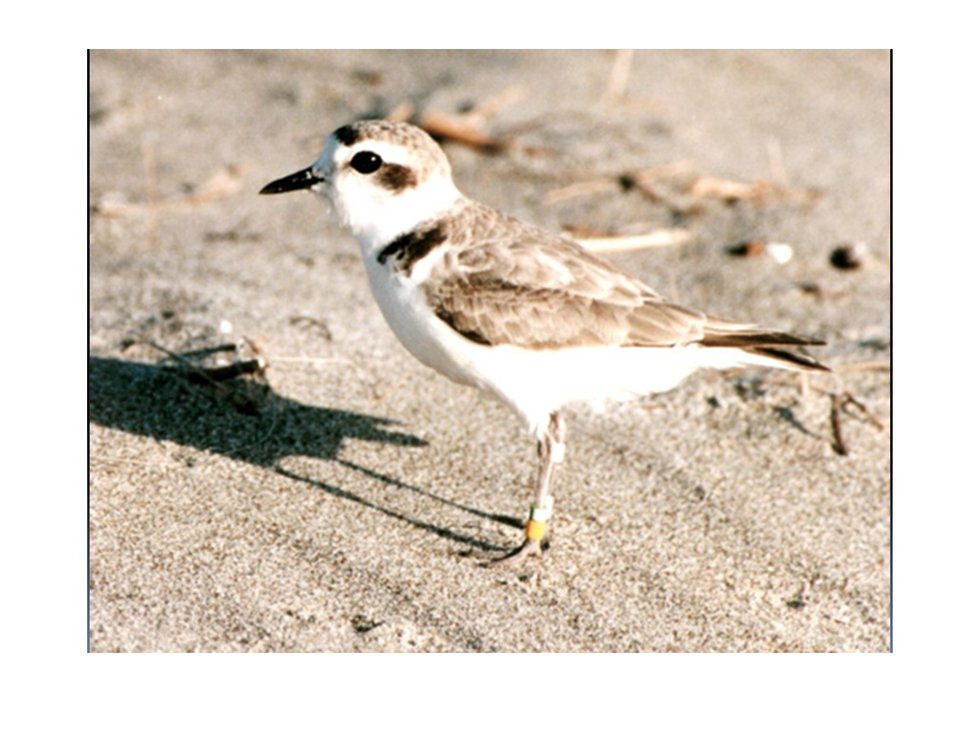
Sandpiper on the beach, Louisiana